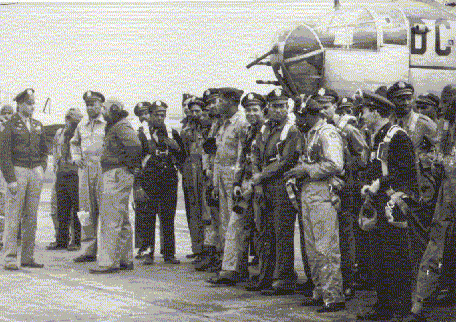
Clarence D.

African-American pilots from the 332nd Fighter Group, the famed